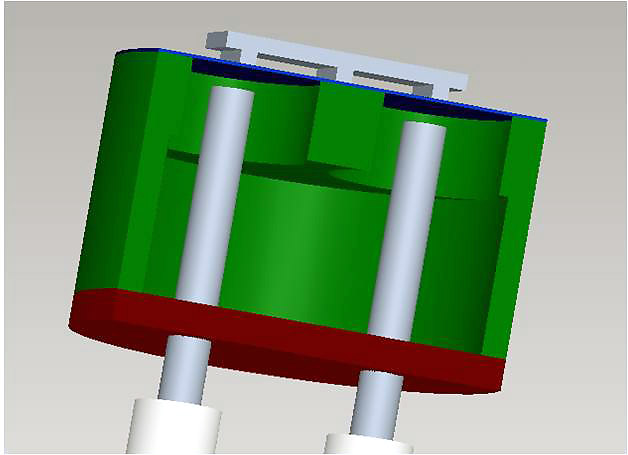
Research into flies' hearing could aid UAS program

This image depicts a fly ear-inspired sensor. Engineers at the University of Maryland are using the hearing mechanisms of flies as a model for research into miniature acoustic sensors and sound localization techniques.